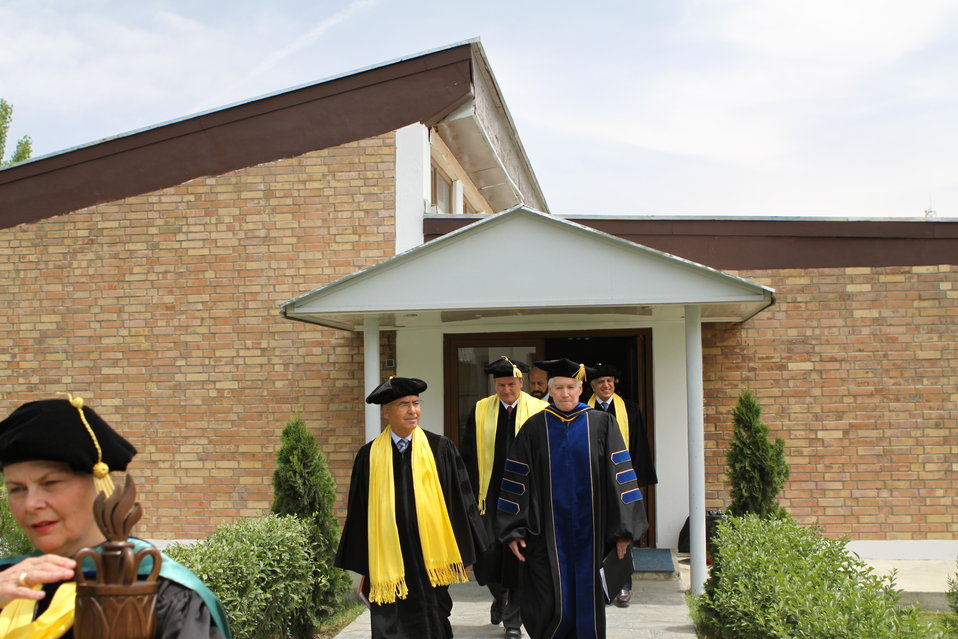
100526 AUAF Graduation 086